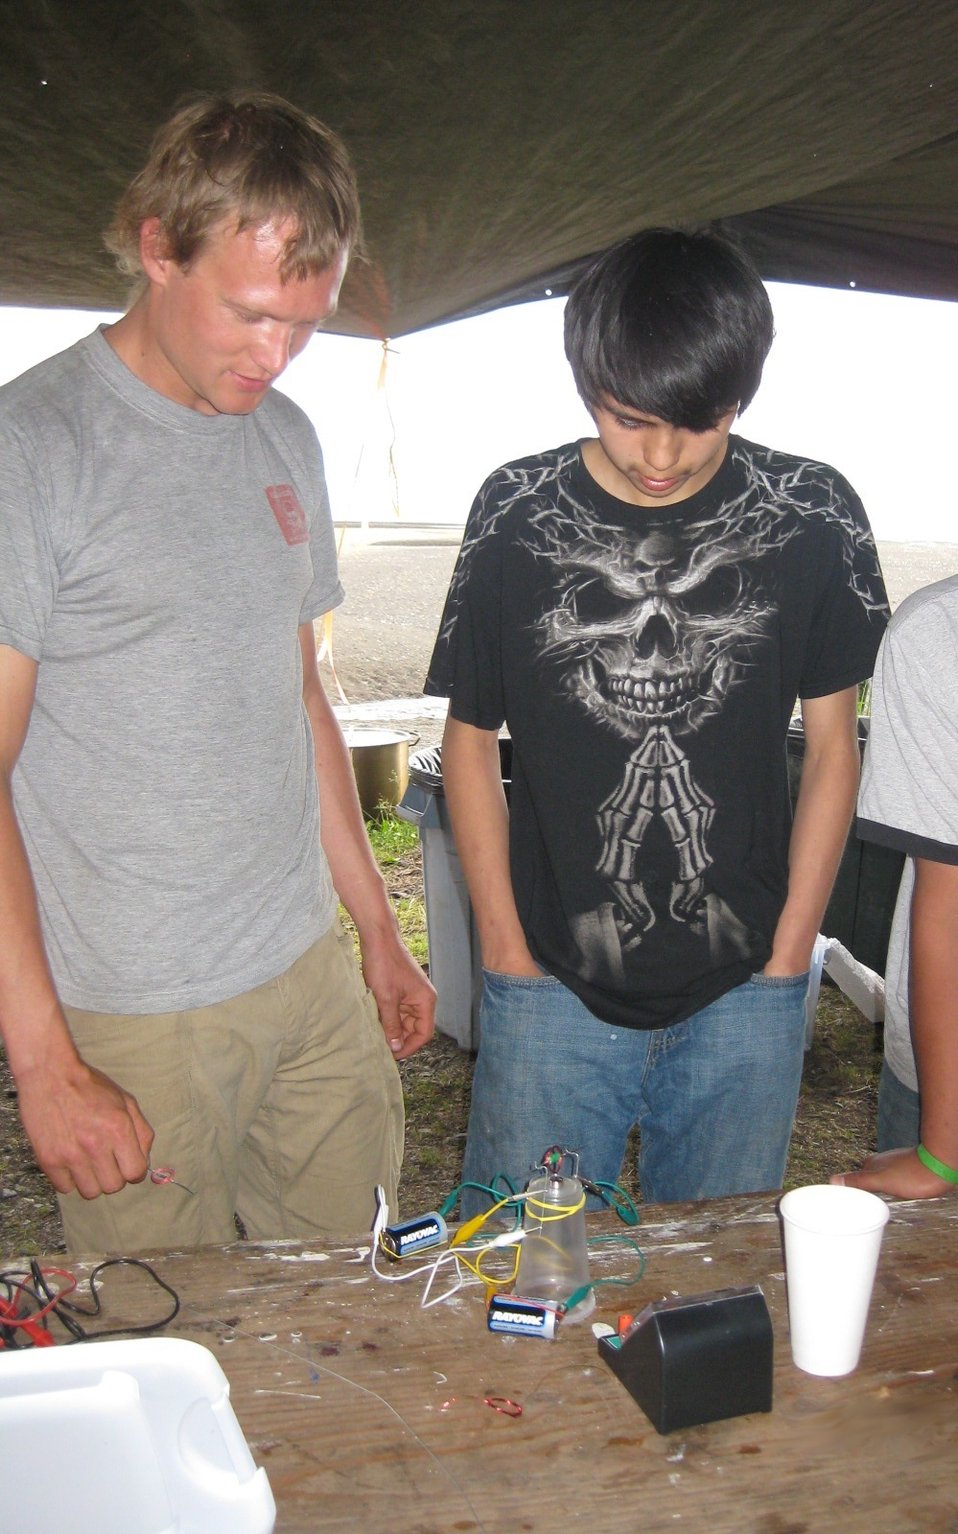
Indian Energy Beat, Fall 2012

NREL's Levi Kilcher advises Skyler Copsey at the Youth Energy Training during the Kake Culture Camp in Kake, Alaska.